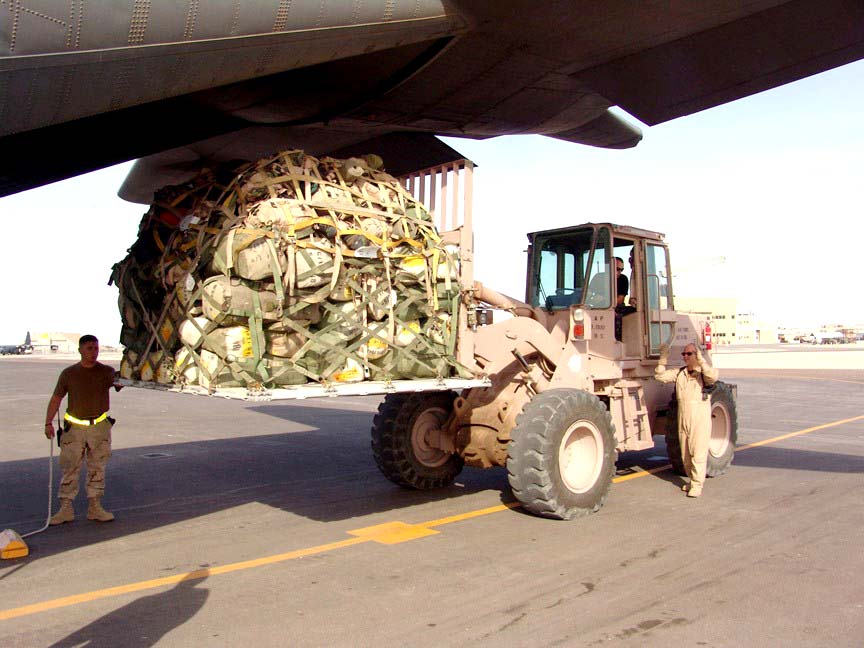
Loader in waiting

SOUTHWEST ASIA -- Master Sgt. Dean Cook motions for Senior Airman Robert Charron to move his forklift and its pallet of cargo forward as Senior Airman Raymond Castoreno guides it into a C-130 Hercules. All three Airmen are assigned to the 386th Air Expeditionary Wing at a forward-deployed location providing tactical airlift supporting Operation Iraqi Freedom. Sergeant Cook is a loadmaster assigned to the 746th Expeditionary Airlift Squadron. Airman Charron and Airman Castoreno are assigned to the 386th Expeditionary Logistics Readiness Squadron.